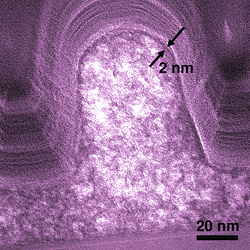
Nanoimprint Lithography Tests

Electron micrograph shows a cross-section of a typical SOG microcircuit feature. Nanoporous regions in the interior are lighter. The process forms a dense, stronger skin about 2 nanometers thick on the outside. (Color added for clarity.)